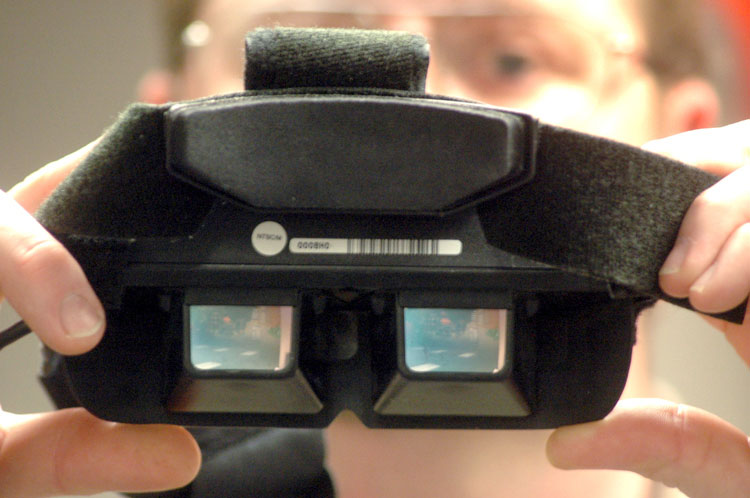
Virtual reality prepares students for parachuting

ROBINS AIR FORCE BASE, Ga. -- Dave Dawson holds special training goggles that use virtual reality to simulate a parachute jump for the person wearing them. Mr. Dawson is a continuation training specialist with the 19th Air Refueling Group here.